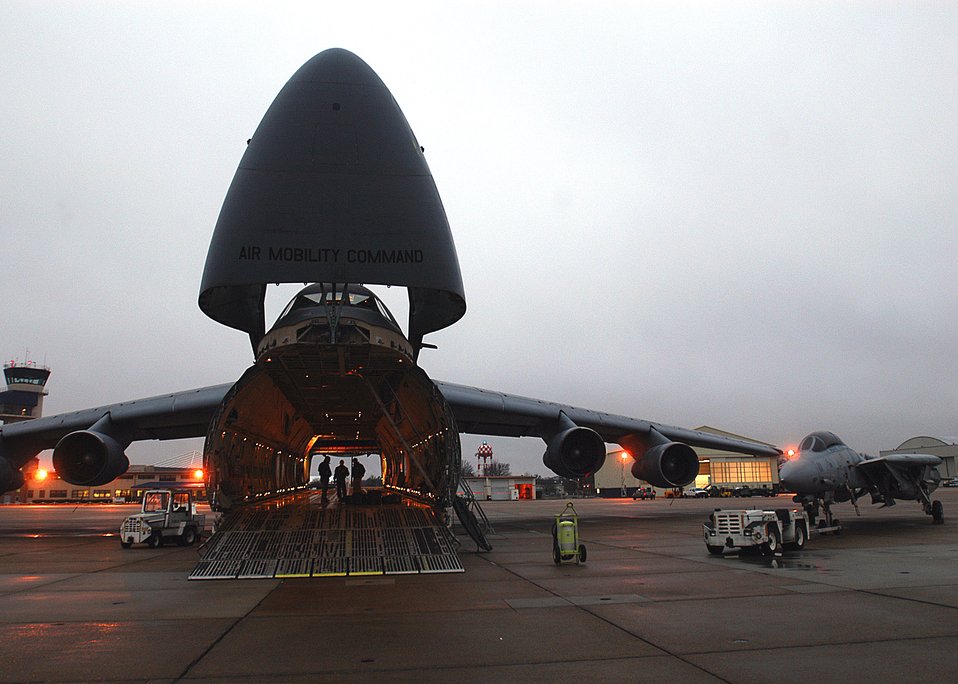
The C-5 gets the call...

C-5 Galaxy loadmasters prepare to load a Navy F-14 Tomcat into the aircraft at Naval Air Station Oceana in Virginia Beach, Va., Feb. 5. The fighter is being transported to an aviation museum in Fort Worth, Texas. The C-5 and aircrew are from the Air Force Reserve Command's 512th Airlift Wing at Dover Air Force Base, Del.